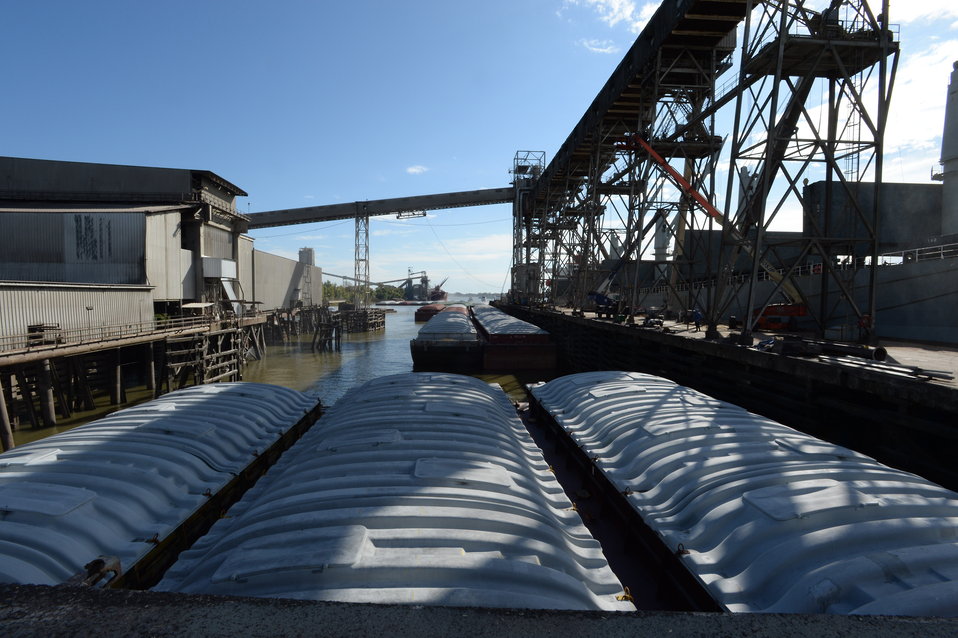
Grain barges tied up to pier near grain elevators near the Port of New Orleans in New Orleans, LA on Tuesday, Nov. 19, 2013.